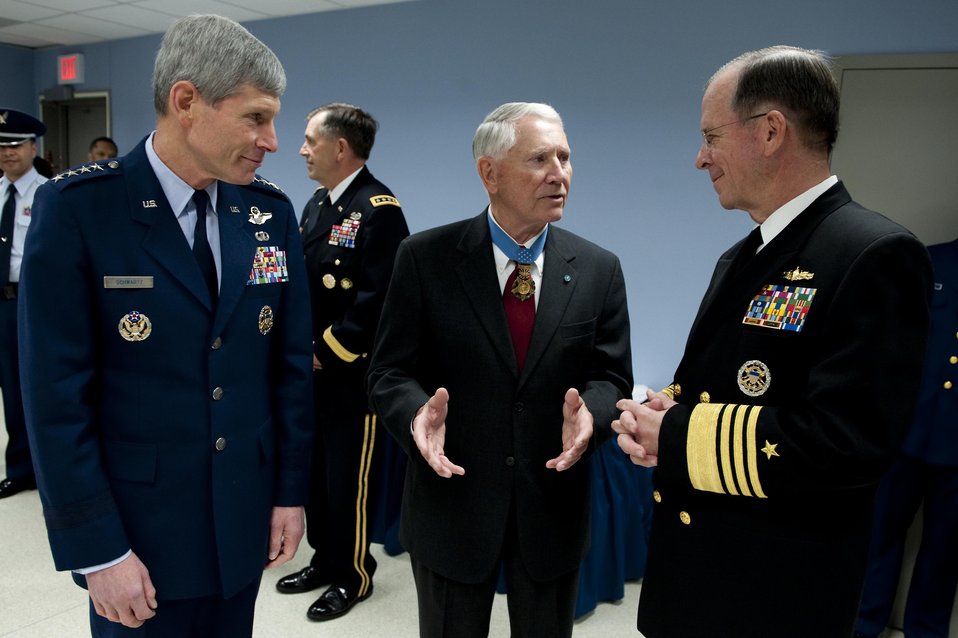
150th anniversary of the Medal of Honor

Retired Col. Leo K. Thorsness, president of the Congressional Medal of Honor Society, speaks with Air Force Chief of Staff Gen. Norton Schwartz and U.S. Navy Adm. Mike Mullen, chairman of the Joint Chiefs of Staff, March 25, 2011, prior to a ceremony honoring the 150th anniversary of the Medal of Honor in the Hall of Heroes at the Pentagon in Washington, D.C.